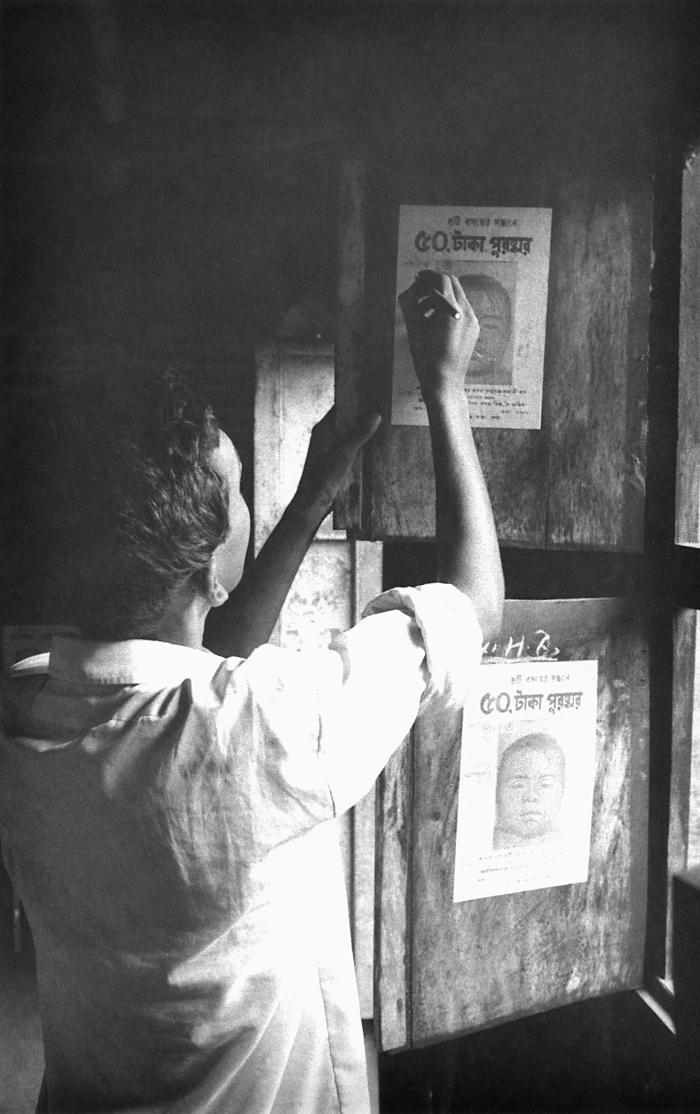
This 1975 image depicted a local Bangladesh smallpox eradication team volunteer as he was hanging a reward poster in his community, announcing the 50 Taka reward to be paid to anyone who reported what proved to be a confirmed case of smallpox.